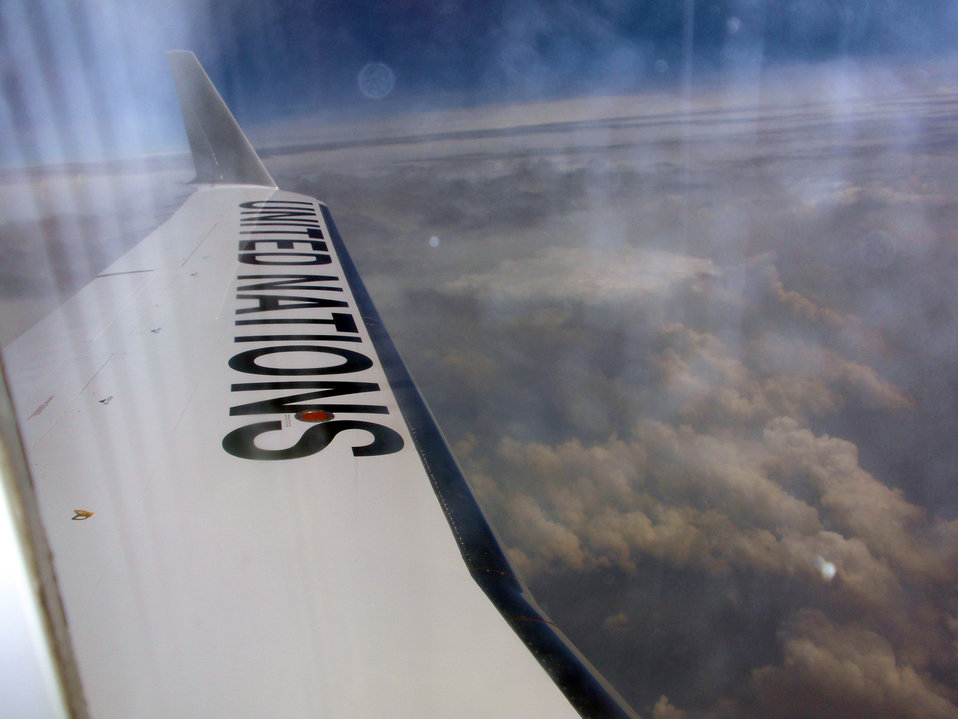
Behind the Scenes: UN Plane to Goma

The scene looking out the window aboard the United Nations plane carrying U.S. Secretary of State Hillary Rodham Clinton as she traveled from Kinshasa to Goma, Democratic Republic of the Congo August 11, 2009.